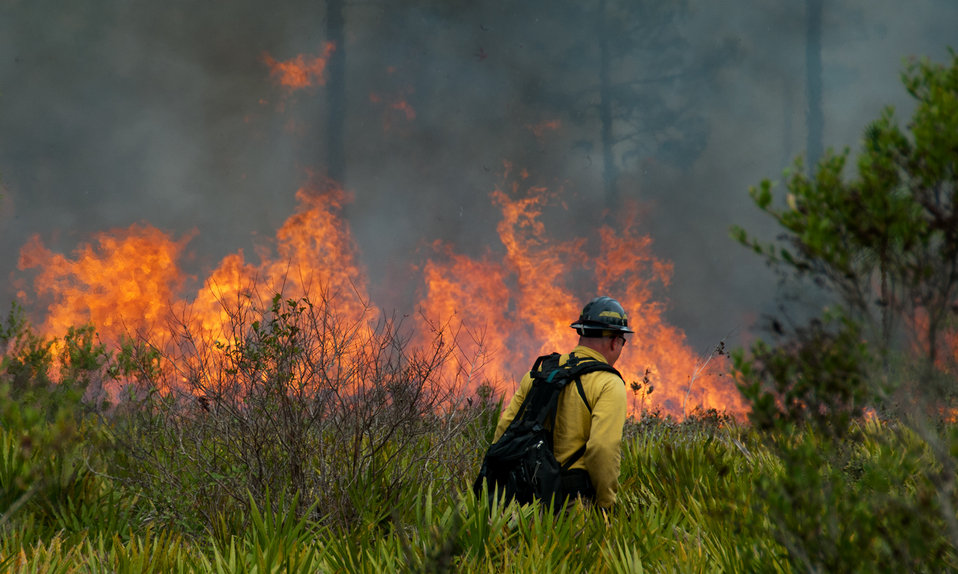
Lake Woodruff Volusia 5 Prescribed Fire Febuary 2014

USFWS firefighter Wes Allie uses his drip torch to finish burning a section of unburned vegetation. On February, 12 2014 USFWS firefighters conducted a 137 acre prescribed fire at Lake Woodruff NWR to reduce the wildfire risk and enhance the wildlife habitat on the southern end of the refuge.